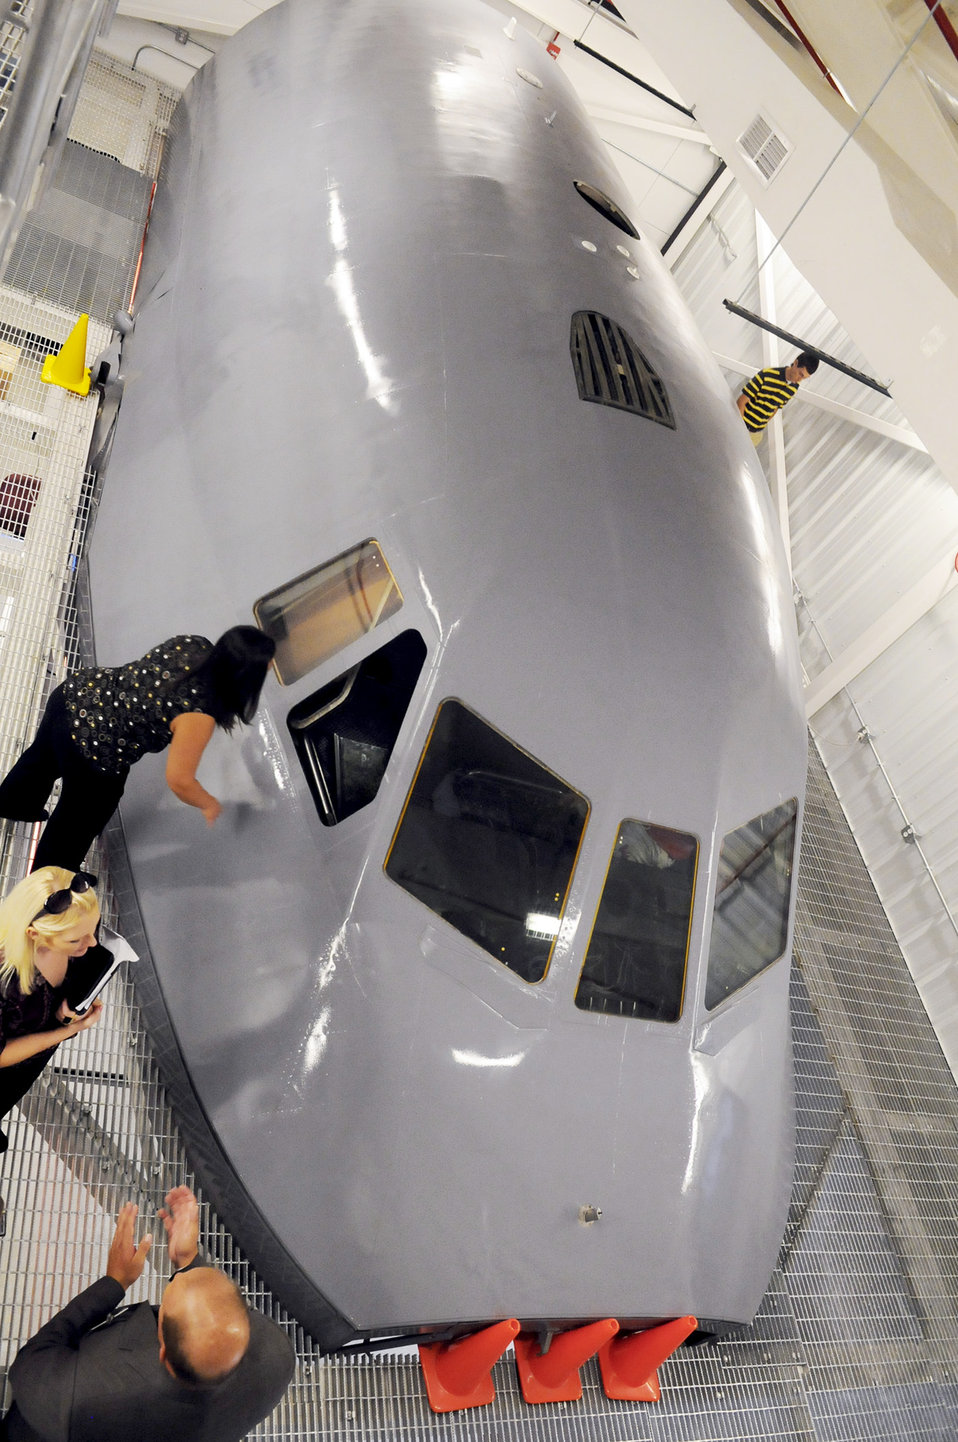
C-5 Galaxy cockpit

Visitors attending the opening of a new facility at Robins Air Force Base, Ga., Sept. 10, 2010, view the C-5 Galaxy cockpit section housed there that will enable engineers to test software in a real environment without tying up actual C-5s. The cockpit section came from a C-5 that crashed at Dover AFB, Del., in 2006.